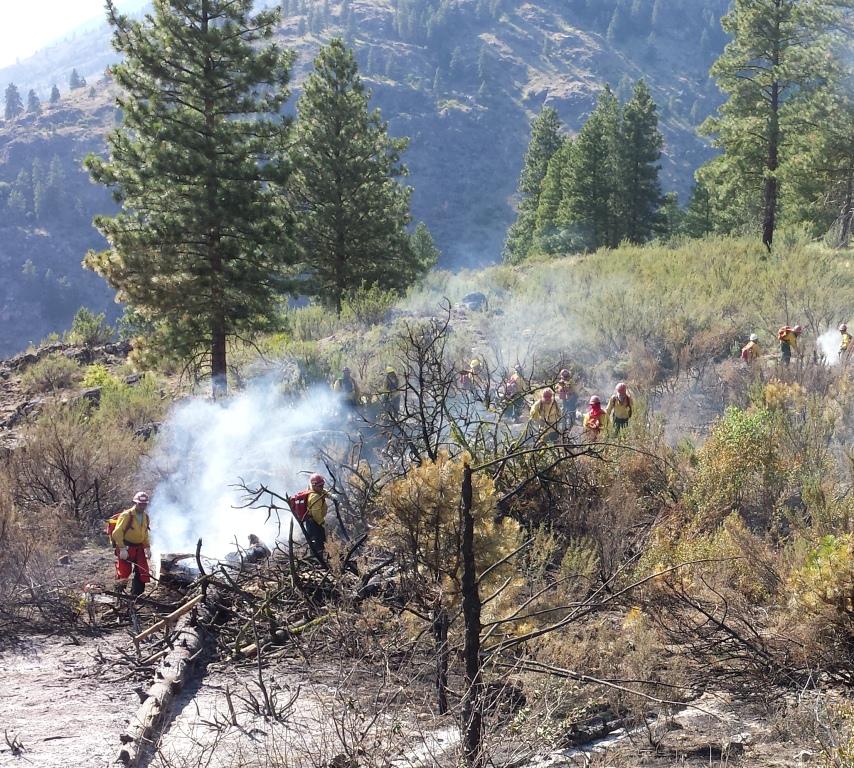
Fire crews work to cool and extinguish the 25 Mile fire. The 25 Mile Fire near Manson, WA began on Jul. 04, 2013 is under investigation and has consumed approximately 2,098 acres and is approximately 70% contained. U.S. Forest Service photo by Washington Interagency Incident Management Team #4.